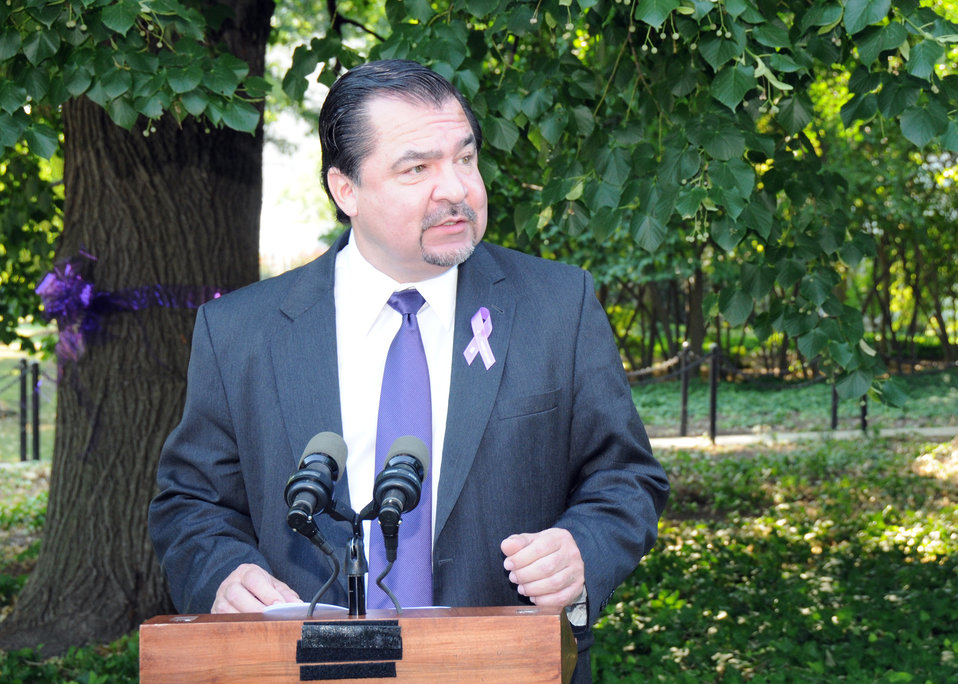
U.S. Department of Agriculture, Food Safety and Inspection Service (FSIS) Administrator Alfred V. Almanza makes remarks at the Ceremony of Remembrance honoring slain FSIS Inspectors and dedication of a tree at the U.S. Department of Agriculture in Washington, DC, on Monday, June 21, 2010. USDA Photo 10di1413-0027.